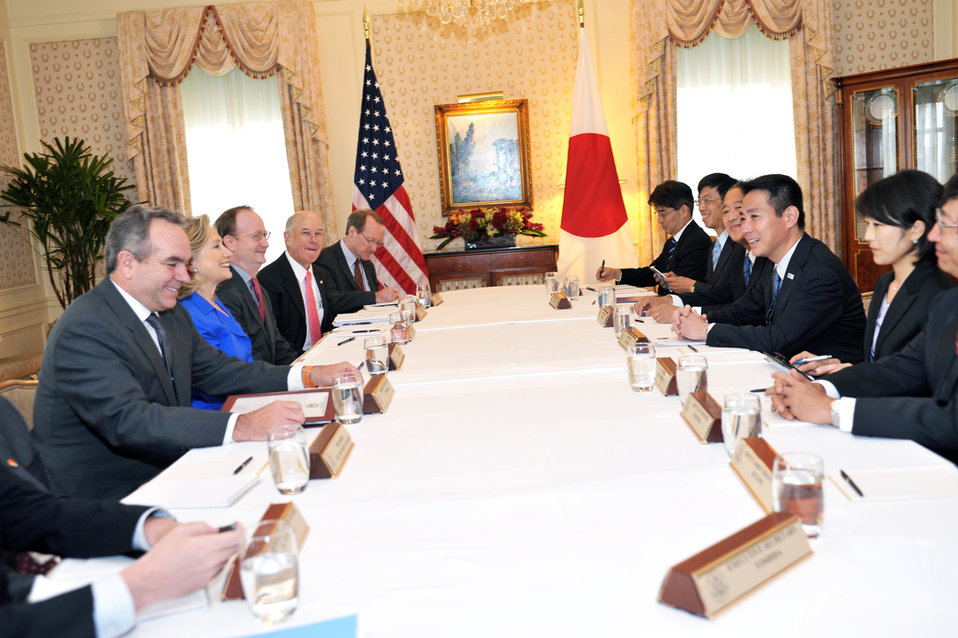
Secretary Clinton and Assistant Secretary Campbell Hold a Bilateral With Japanese Foreign Minister Maehara

U.S. Secretary of State Hillary Rodham Clinton and U.S. Assistant Secretary of State for East Asian and Pacific Affairs (right of the Secretary) holds a bilateral meeting with Japanese Foreign Minister Seiji Maehara at the Waldorf-Astoria Hotel in New York, New York, on September 23, 2010.